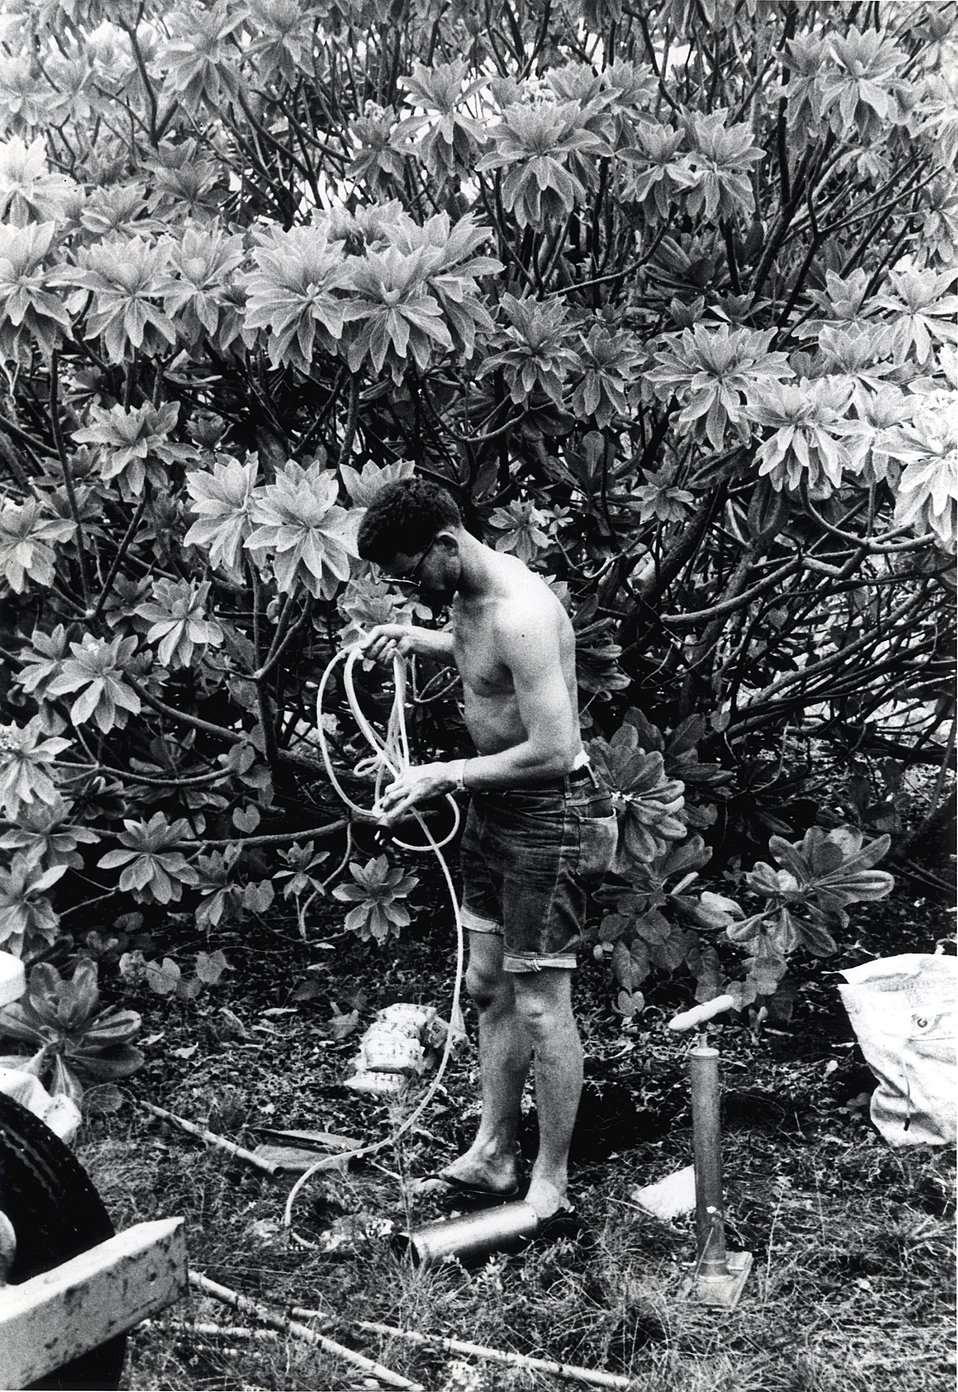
The condition of the Bikini and Eniwetok Atolls, six years after the last US atmospheric test there, checked by scientists in August 1964.